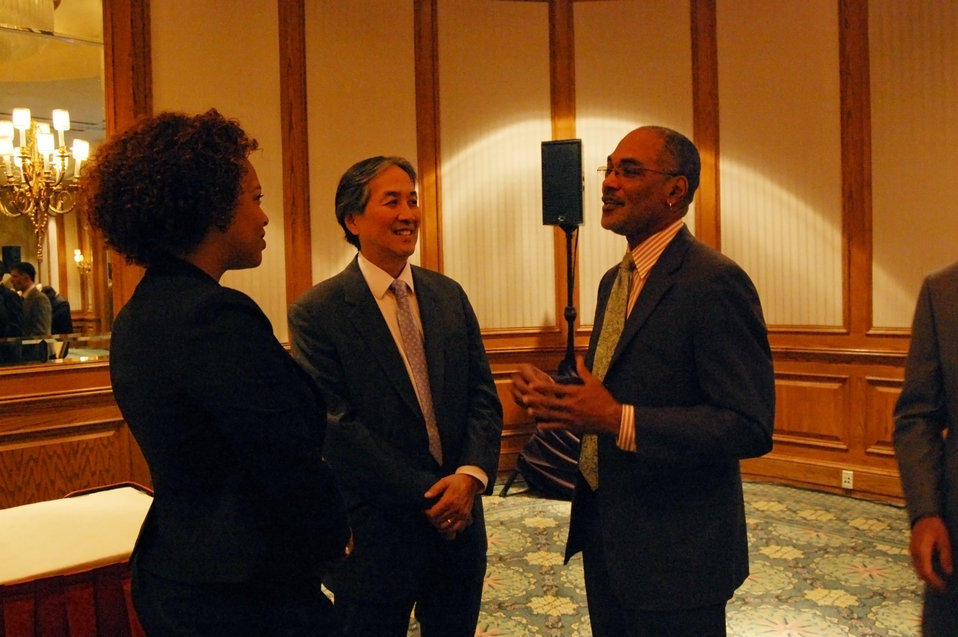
PACHA conf025